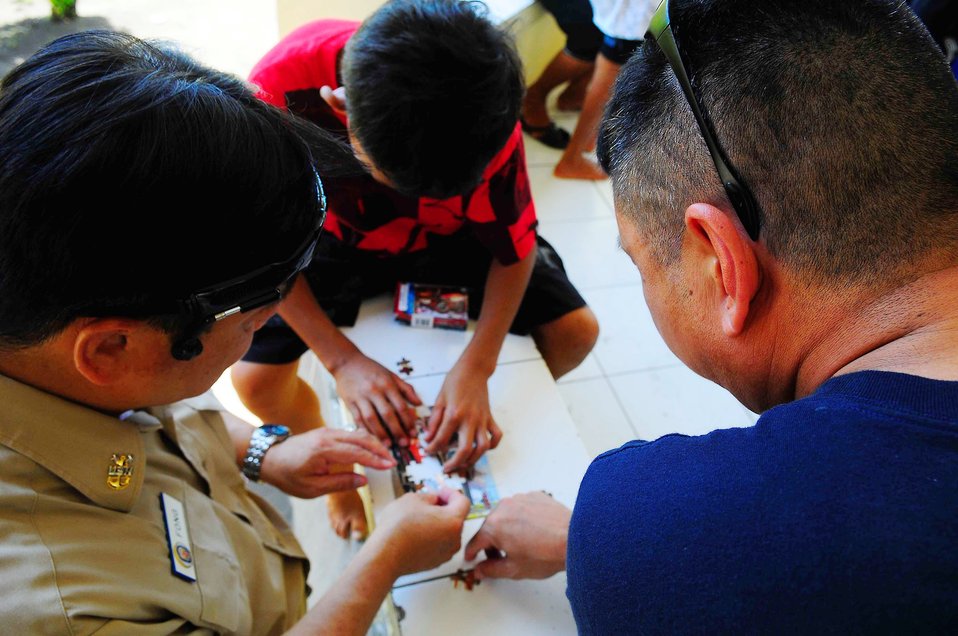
Command Master Chief, Master Chief Hospital Corpsman (SW/FMF) Noel Manlapaz and Master Chief Culinary Specialist (SW/AW) Jack Fong Piece Together a Puzzle With an Indonesian Boy

Command Master Chief, Master Chief Hospital Corpsman (SW/FMF) Noel Manlapaz, right, and Master Chief Culinary Specialist (SW/AW) Jack Fong piece together a puzzle with a boy during a community service event at the Rumah Sejahtera Bagi Anak Orphanage, in support of Pacific Partnership 2010 in Tobelo, Indonesia, on July 14, 2010. Pacific Partnership 2010 is the fifth in a series of annual U.S. Pacific Fleet endeavors conducted in Indonesia as a disaster relief exercise to strengthen regional partnerships.